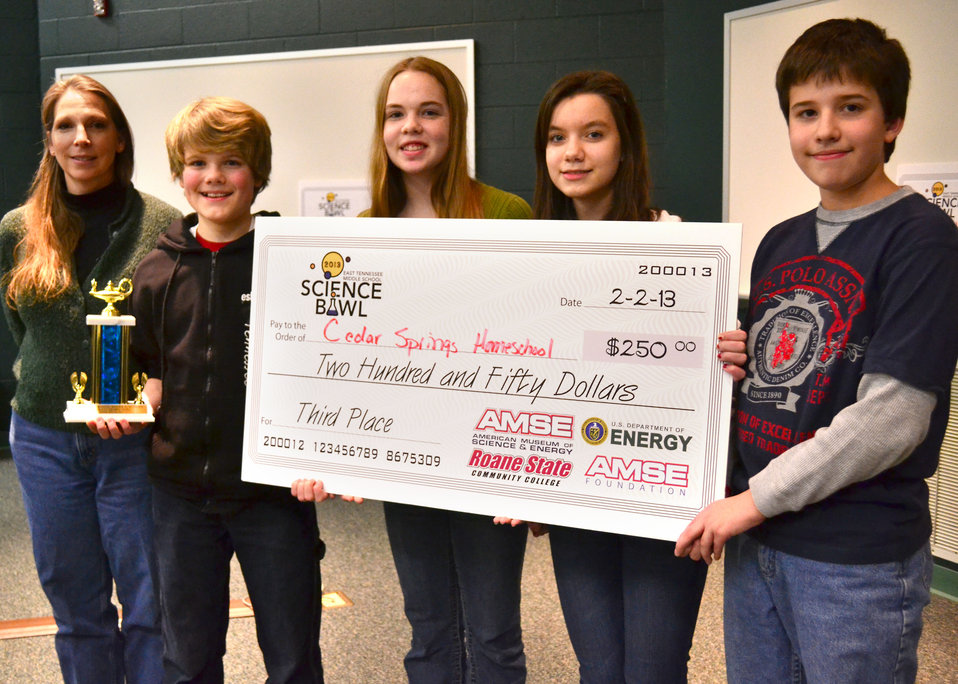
Cedar Springs Homeschool Third Place DOE Tennessee Middle School Science Bowl Oak Ridge

13-008 DOE photo Lynn Freeny DOE Tennessee Middle School Scence Bowl 2-2-2013 Oak Ridge Tennessee